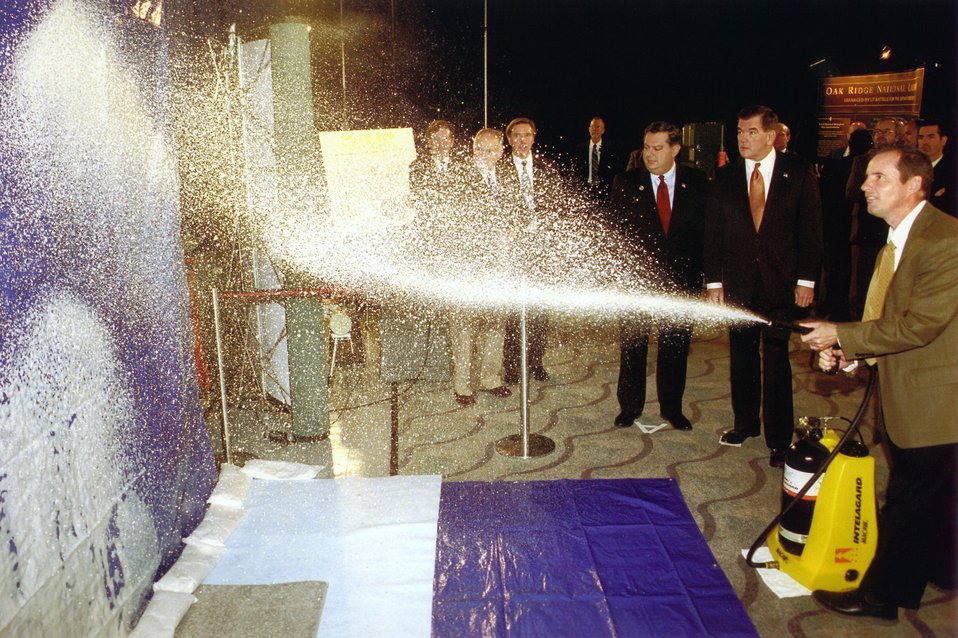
DEMONSTRATION OF THE DECONTAMINATION FOAM DEVELOPED AT SANDIA NATIONAL LABORATORIES.

SANDIA RESEARCHER MARK TUCKER DEMONSTRATES THE SNL DEVELOPED DECONTAMINATION FOAM TO SECRETARY OF ENERGY ABRAHAM AND HOMELAND SECURITY DIRECTOR TOM RIDGE. THIS DEMONSTRATION WAS PART OF A DISPLAY OF COUNTER-TERRORISM TECHNOLOGIES AT DOE'S HEADQUARTERS FORRESTAL BUILDING IN WASHINGTON, DC.